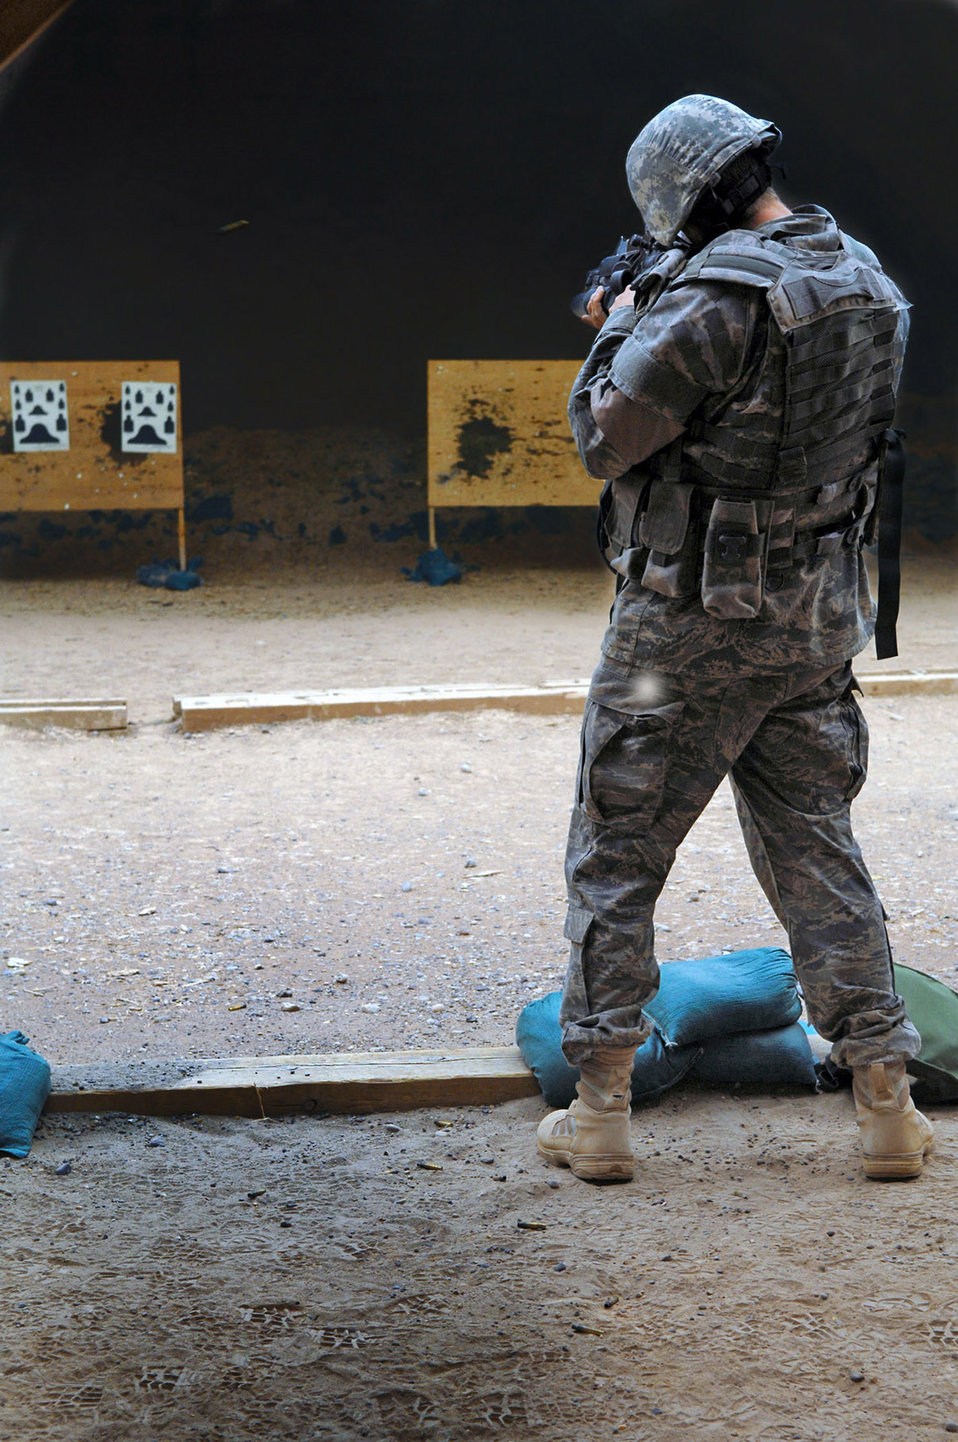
Zeroing in

Airman Chad McCambridge shoots an M-4 April 30 at Balad Air Base, Iraq. Security forces members went to the range to zero in their scopes and to get comfortable with their weapons. Airman McCambridge is assigned to the 332nd Expeditionary Security Forces Squadron and deployed from Royal Air Force Lakenheath, England.